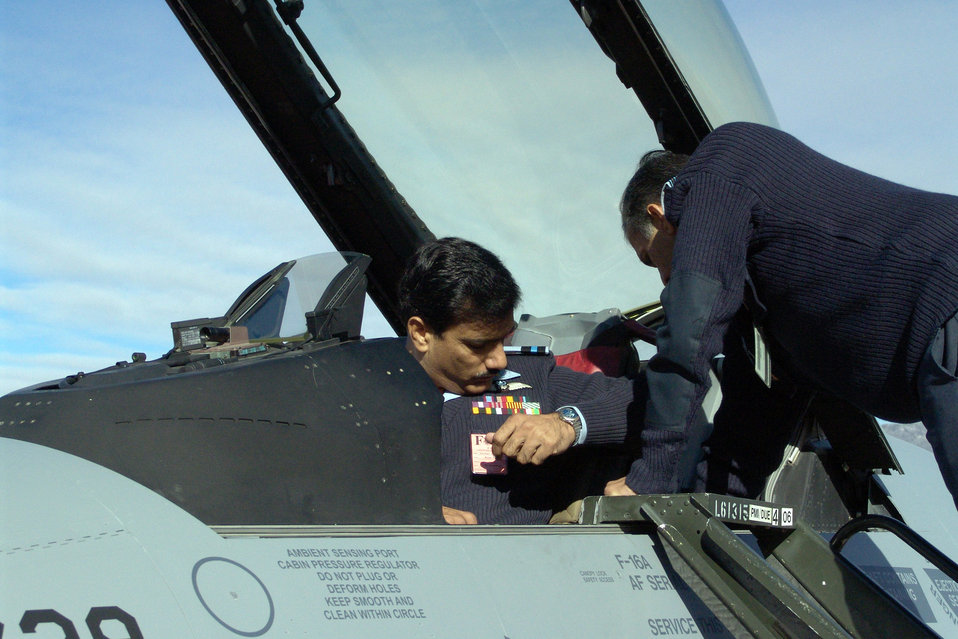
Pakistan bound

HILL AIR FORCE BASE, Utah (AFPN) -- Pakistani Air Commodore Syed Hassan Raza inspects an F-16 Fighting Falcon at Hill Air Force Base, Utah, before it was transferred to the Pakistani air force. Two upgraded Air Force F-16s were delivered to the Pakistani air force Dec. 12. Commodore Raza is the F-16 Project Falcon director of the F-16 Weapons System Management.